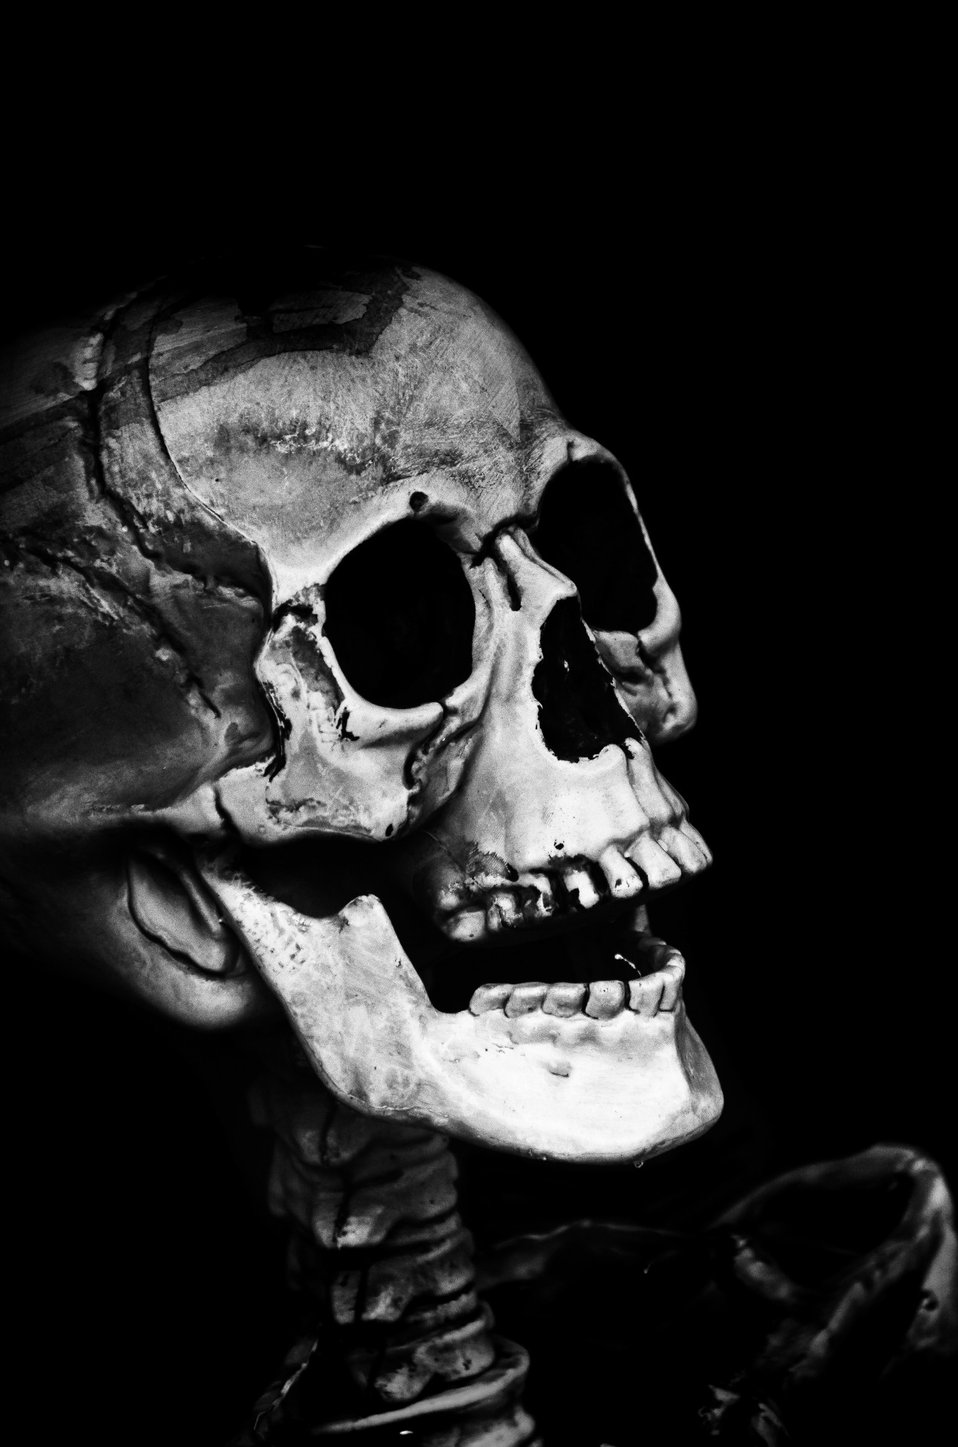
Skull - halloween.